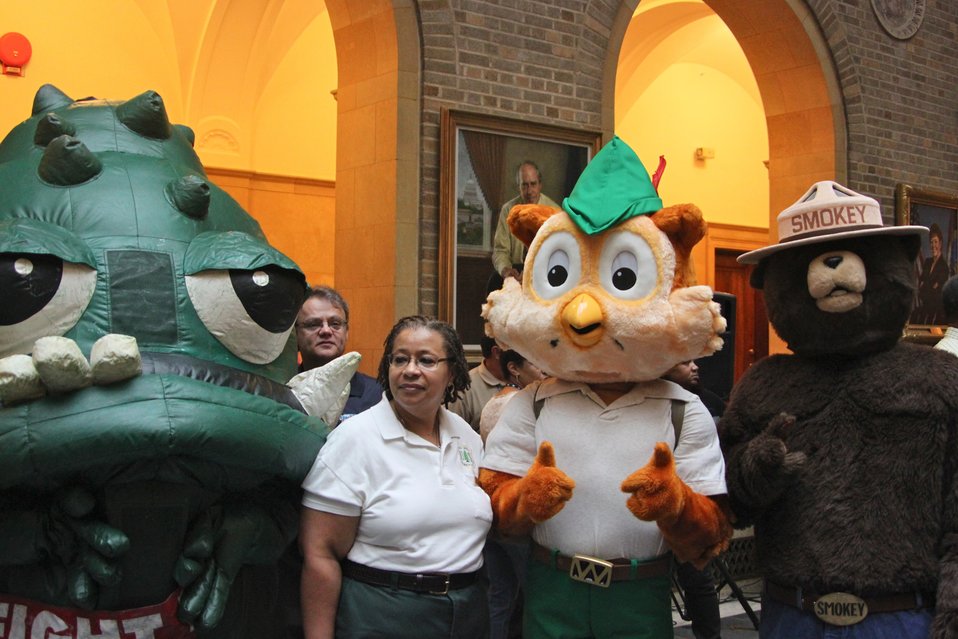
Mascots at Farmers Market Opening

Fight Bac, Woodsey Owl, and Smokey Bear helped open the U.S. Department of Agriculture 's (USDA) Farmers Market on Friday, Jun. 7, 2013.